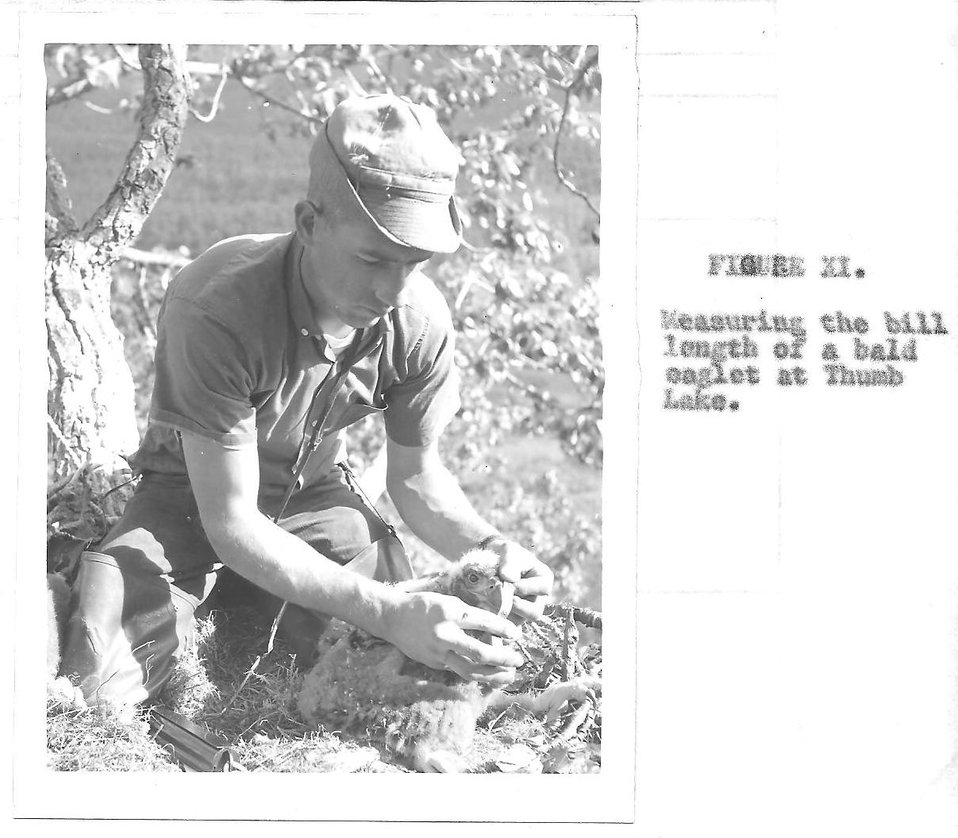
(1961) Measuring Bill Length of Bald Eagle

Credit: USFWS

Source and Contact: Kodiak National Wildlife Refuge